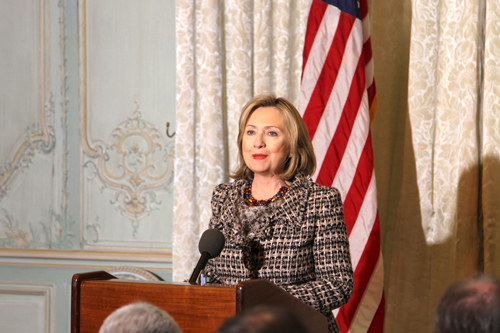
Secretary Clinton Addresses Reporters

U.S Secretary of State Hillary Rodham Clinton addresses reporters during a press conference held at the U.S. Embassy in Paris, France, on March 19, 2011, following a crisis summit on Libya with world leaders at the Elysee Palace.